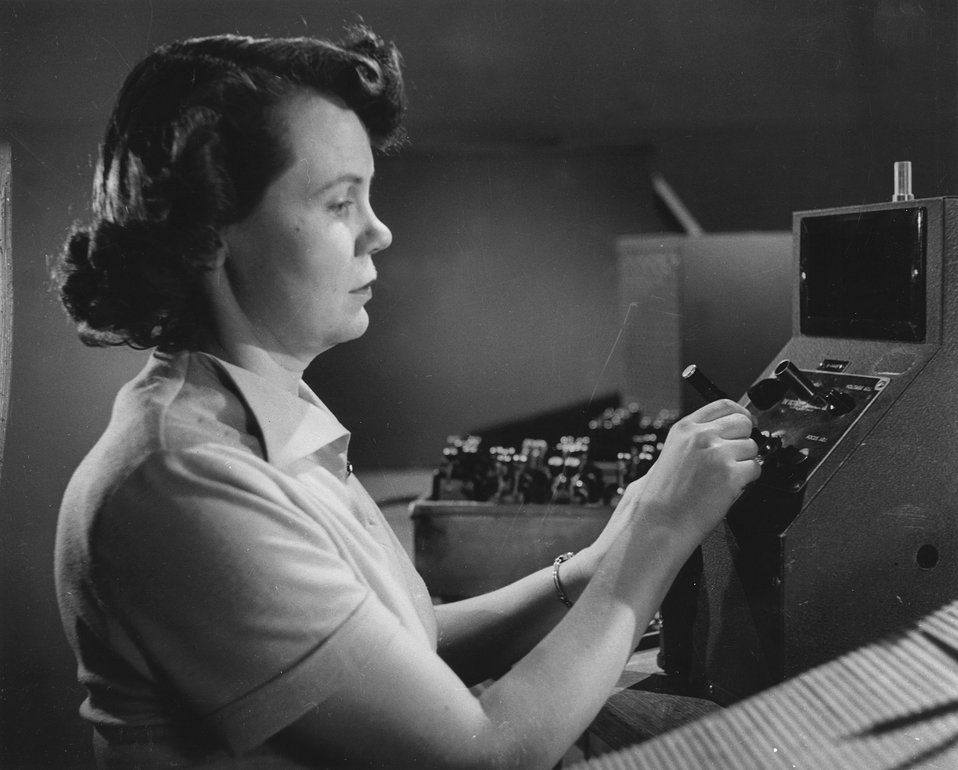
As part of regular Health Physics procedures, a Laboratory Assistant at Hanford Works, Richland, Washington checks a pocket ionization chamber at a minometer. c. 1953